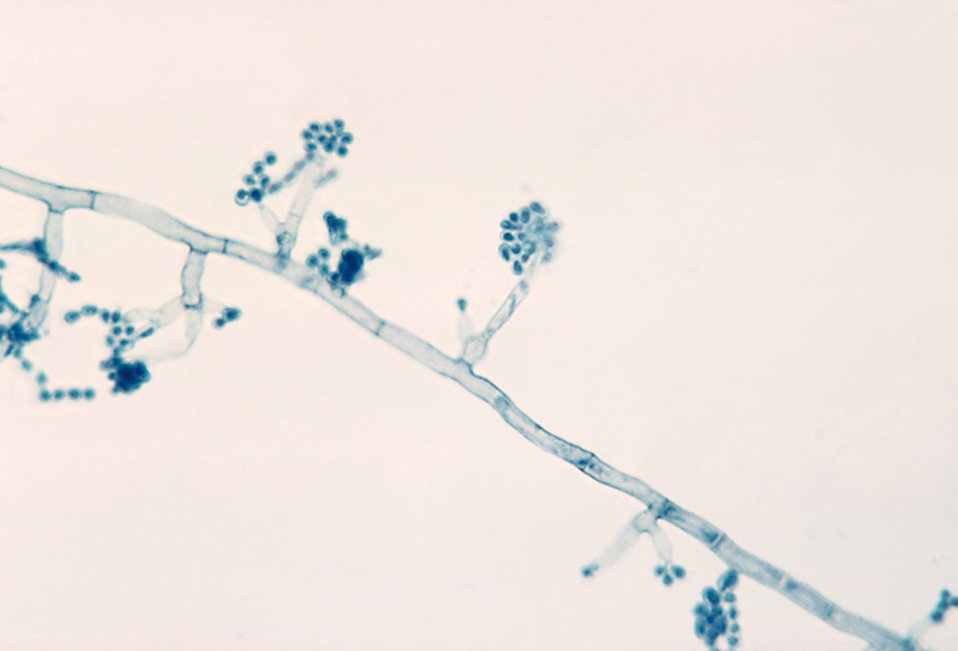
This photomicrograph shows phialides with terminal conidia of the Madurella mycetomatis fungus.